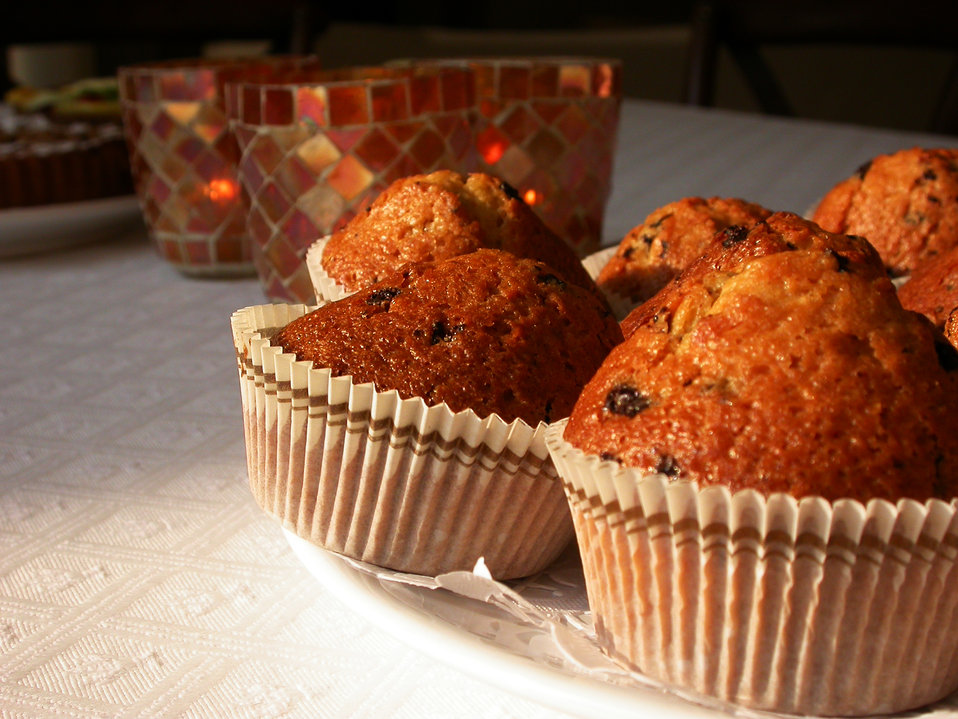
Kleine cake'jes (Berlare,Be)